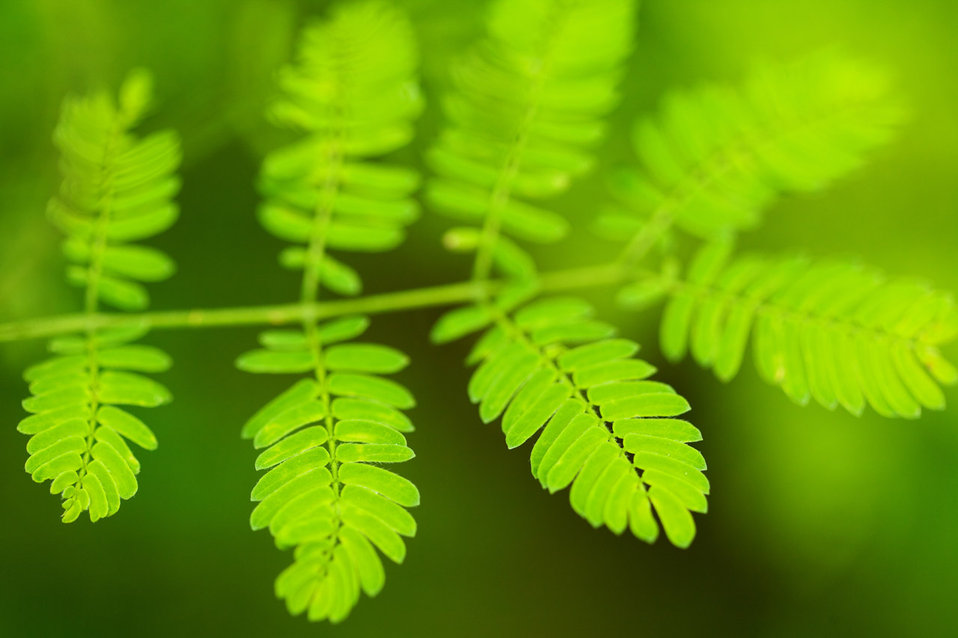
Fresh green leaf

Fresh new green leaf on green background.